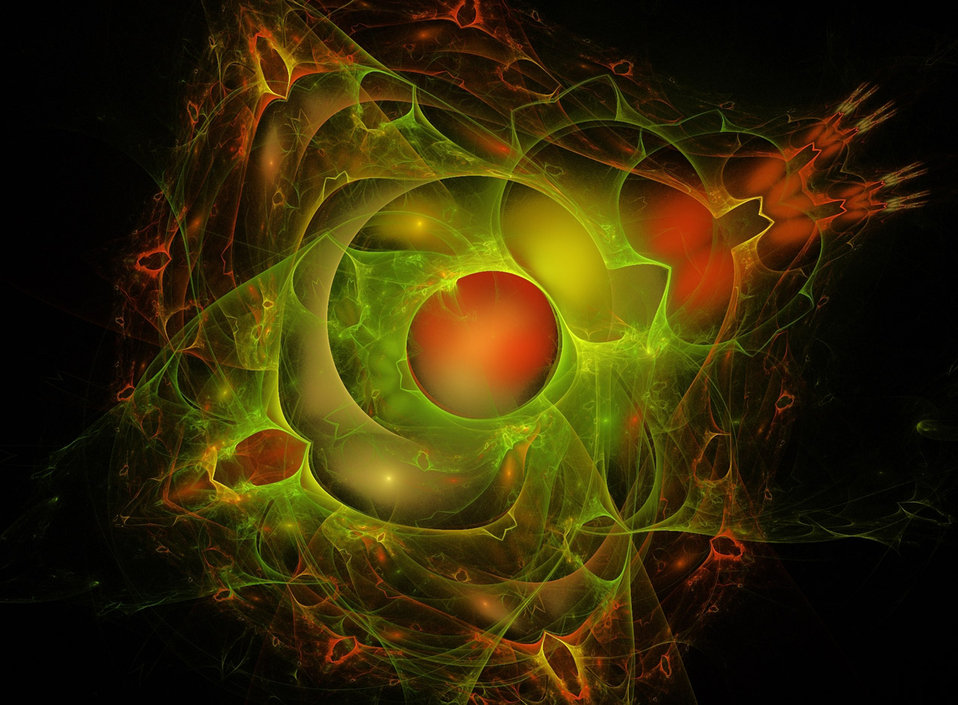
Red and green

Fractal in red and green.